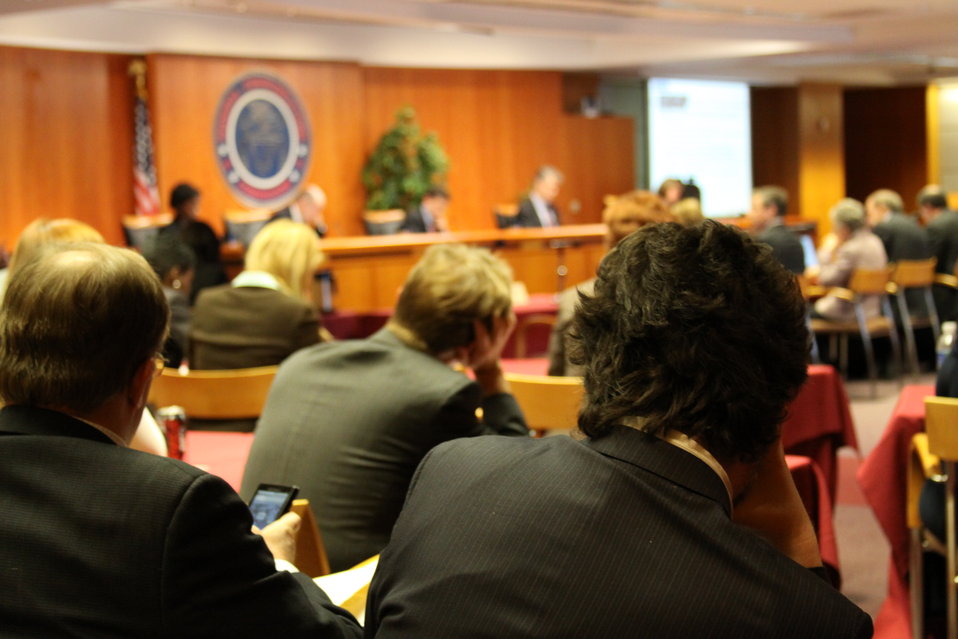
December Commission Meeting